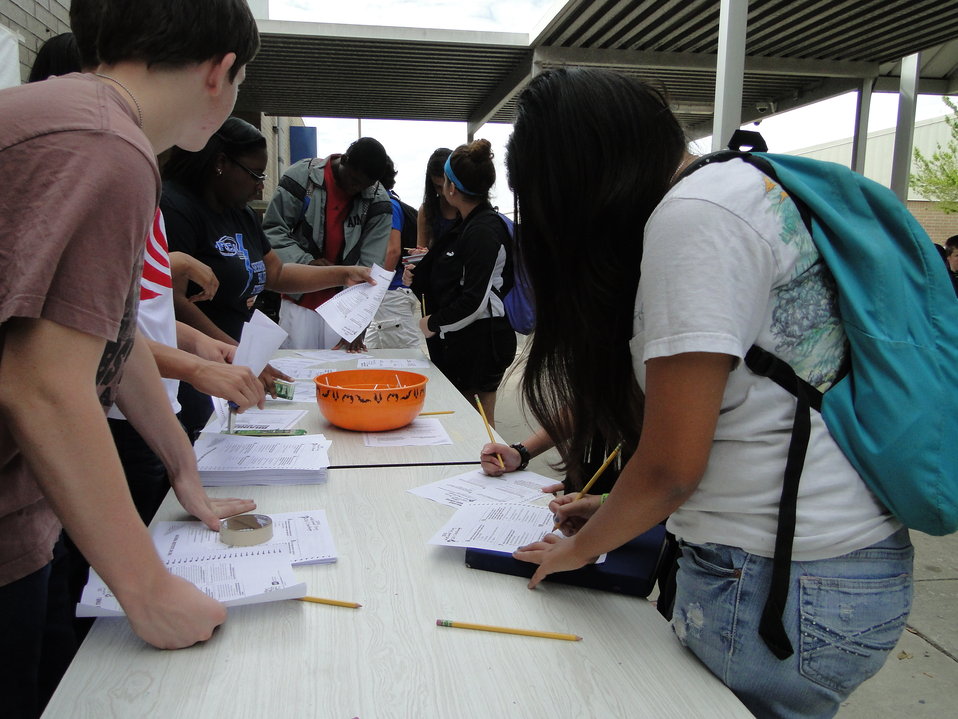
Sebring High School